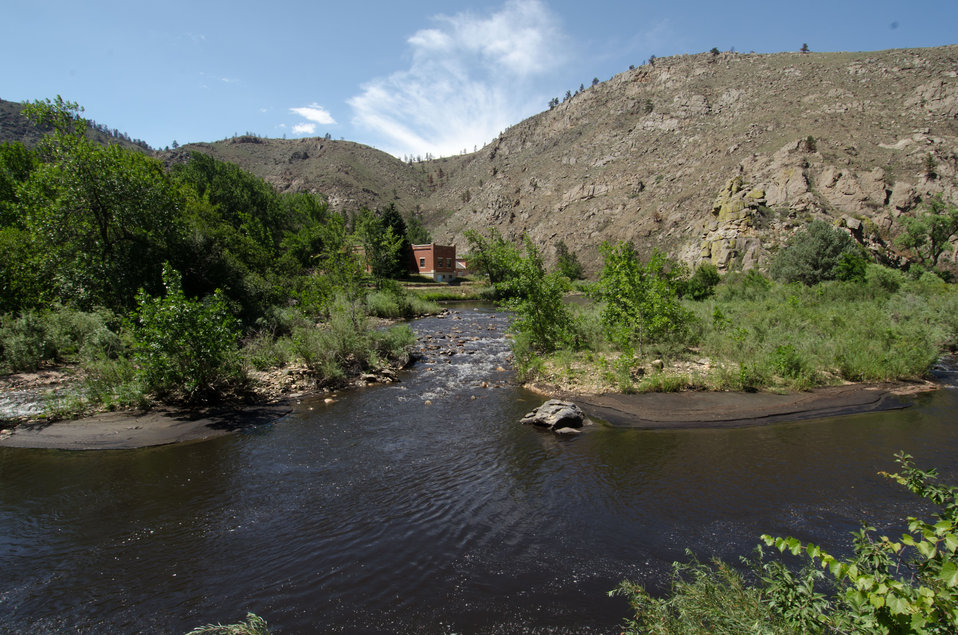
A confluence of two tributaries, the Cache la Poudre and the North Fork of the Cache la Poudre, near Seaman Reservoir, 60 miles north of Denver, Colorado on Friday, July 20, 2012, have been transformed from clear mountain waters to a nearly black water, heavily laden with ash, silt, and burnt debris that was recently washed down mountainsides by thunderstorms. The mountainsides were burned by the Hewlett Gulch Fire (May 14, 2012), in the Poudre Canyon area. At its peak more than 400 firefighters were battling fires pushed by 50 mph winds. When the last embers were cooled, more than 12-square miles lay blacked at a cost of approximately 3.2 million dollars. The aerial distribution of straw has successfully kept nearby Seaman Reservoir clean for the drinking water of the City of Greeley. Forest Service lands receive straw, while private and other lands receive a seed mix and straw to promote ground cover plant growth on ash-covered lands. In total, 1,800 tons of straw will be applied during the 14-day operation. One quarter of the cost was paid by the City of Greeley and the U.S. Department of Agriculture funded the remainder.